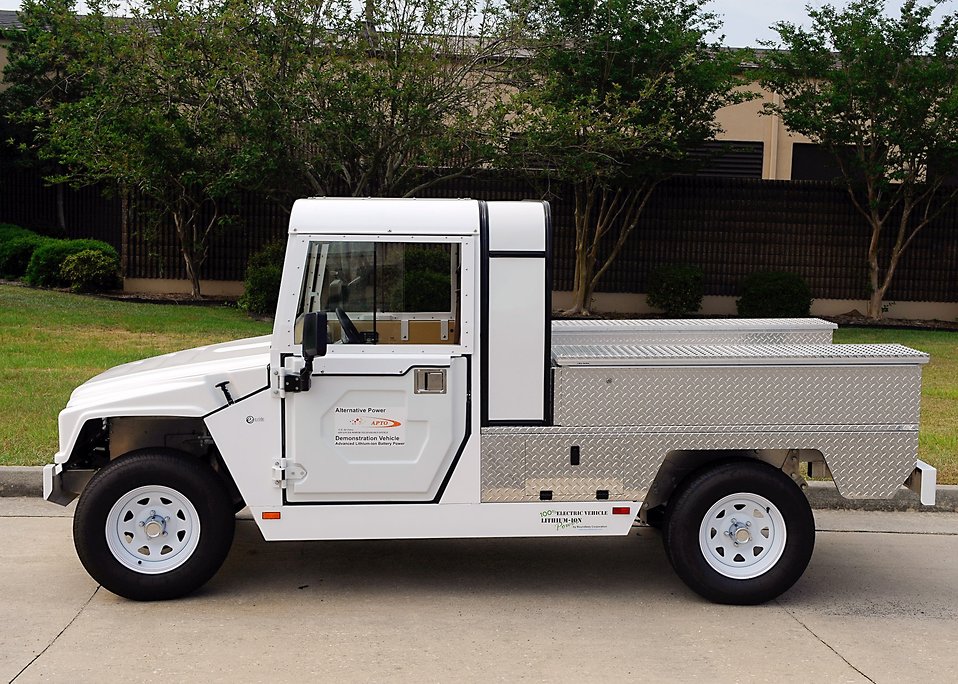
Maintainers go 'green' with electric vehicles

Electric vehicles are currently being used by members of the 23rd Equipment Maintenance Squadron for their daily duties instead of fuel powered vehicles at Moody Air Force Base, Ga. The Aerospace Ground Equipment shop is testing the electric vehicles for efficiency and delivering reports to the Air Force Material Command on the negative and positive aspects of the program.